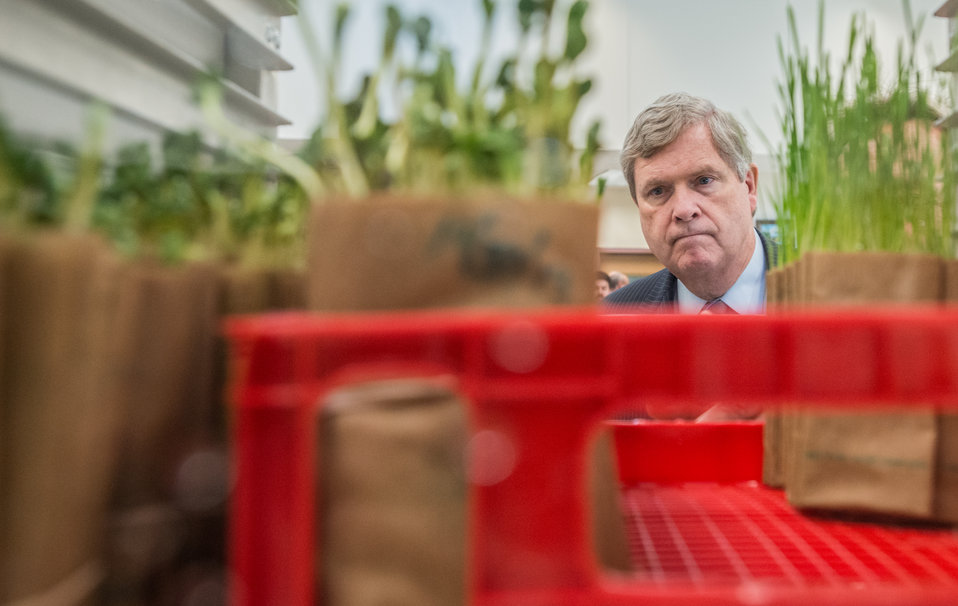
U.S. Department of Agriculture (USDA) Secretary Tom Vilsack, looks at seeds that have been germinated in moist paper towels in the Agriculture Research Service (ARS), National Center for Genetic Resources Preservation (NCGRP), Plant and Animal Genetic Resources Preservation Research Unit germination bay, in Ft. Collins, CO, on Wednesday, Nov. 6, 2013.